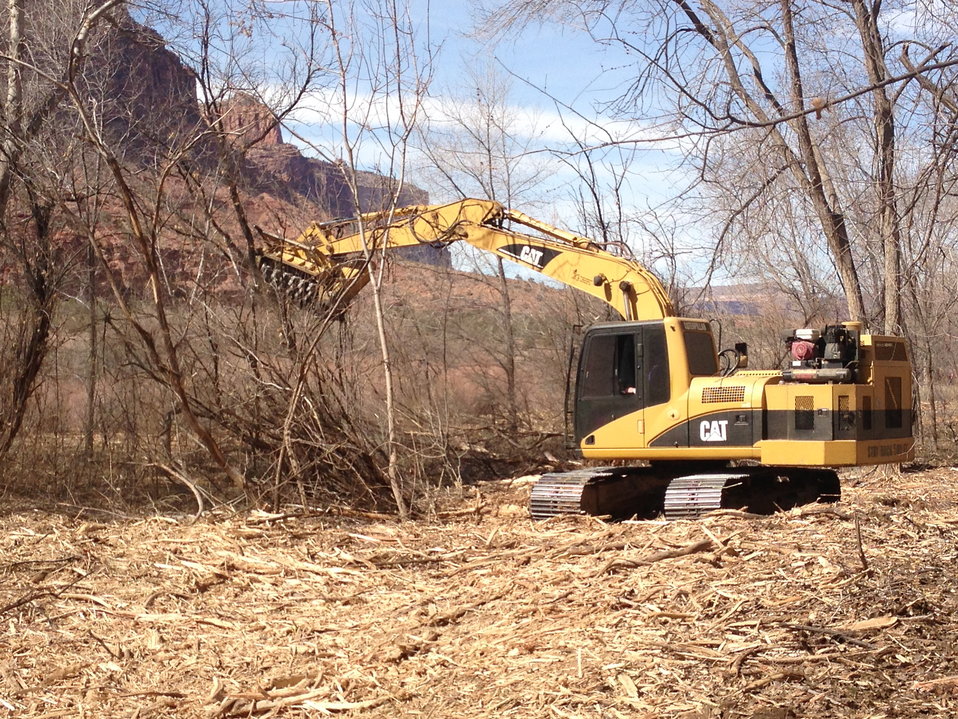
Mulching of Invasive Tamarisk

A contractor removes invasive tamarisk in the Dolores River basin of Mesa County, Colo.

The project was funded by the U.S. Fish and Wildlife Service’s Partners for Fish and Wildlife program, whose habitat restoration projects are extraordinary engines for the U.S. economy. Restoration Returns: The Contribution of Partners for Fish and Wildlife Program and Coastal Program Projects to Local U.S. Economies finds that, in working directly with partners to implement vital on-the-ground habitat restoration, Service programs created more than 3,900 jobs in Fiscal Year 2011, generating a total economic stimulus of $327.6 million.

The “restoration economy” is a subset of green jobs that includes such industries as heavy equipment providers and operators, plant nurseries, landscape architects, and construction companies, among other firms.

Download the entire report at: www.fws.gov/home/restoration returns.html.